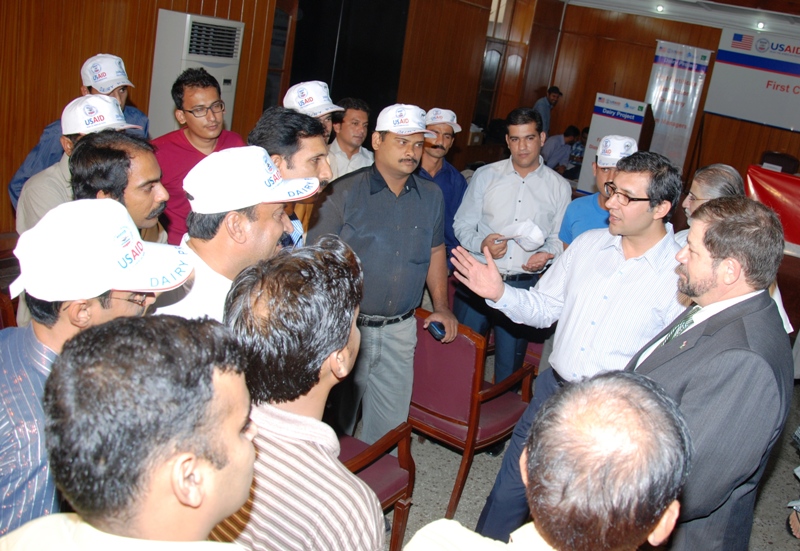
2 - USAID Mission Director Punjab Mr. Jeffrey Bakken interacting with the Dairy Project-trained dairy farm managers on October 4, 2012.